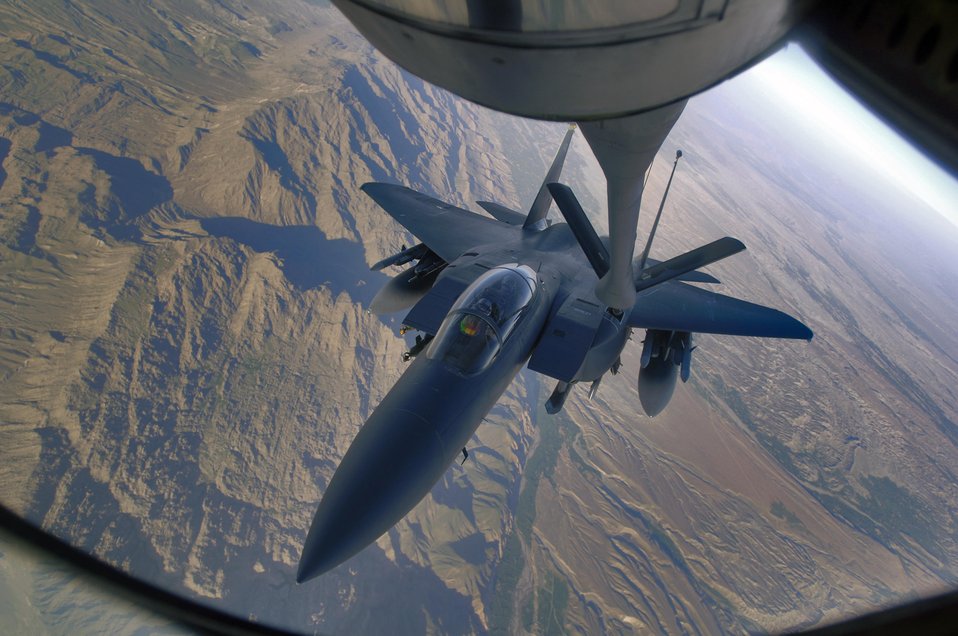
Aug. 30 airpower summary: F-15s deter enemy attack

An F-15E Strike Eagle refuels over the mountains of Afghanistan April 12, 2006. The Strike Eagle is a dual-role fighter designed to perform air-to-air and air-to-ground missions. An array of avionics and electronics systems gives the F-15E the capability to fight at low altitude, day or night, and in all weather.